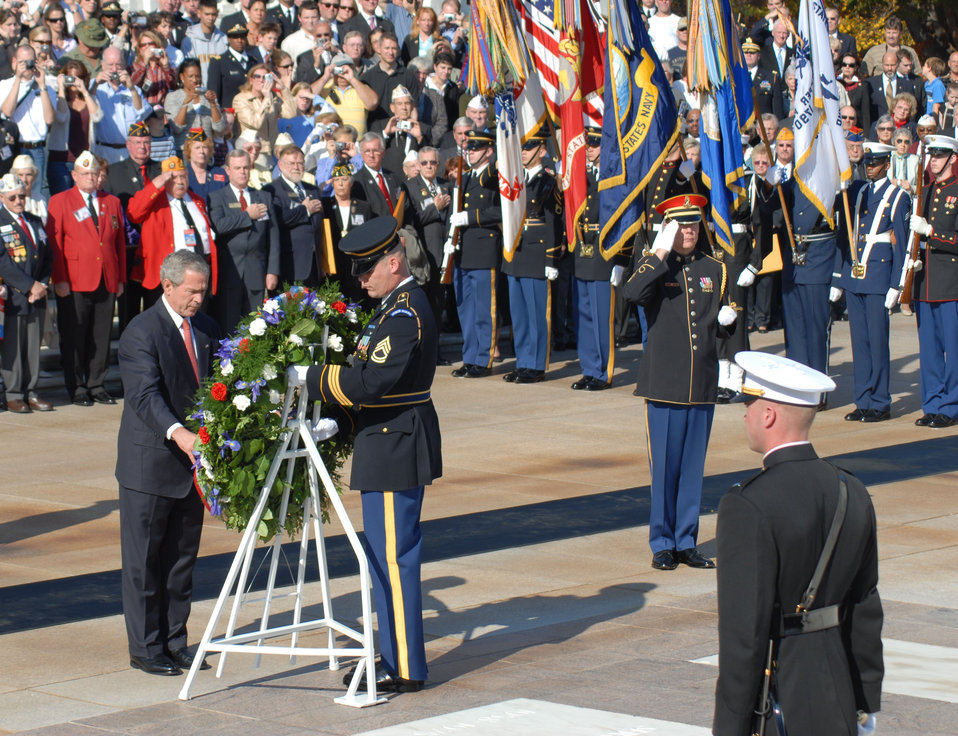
Commander in chief honors veterans

President George Bush lays a wreath at the Tomb of the Unknown Soldiers during a Veterans Day ceremony Nov. 11 at the Arlington National Cemetary in Arlington, Va. The Air Force Honor Guard formed a flight in attendance, along with each of the other four services, and carried the Air Force flag during the ceremony.